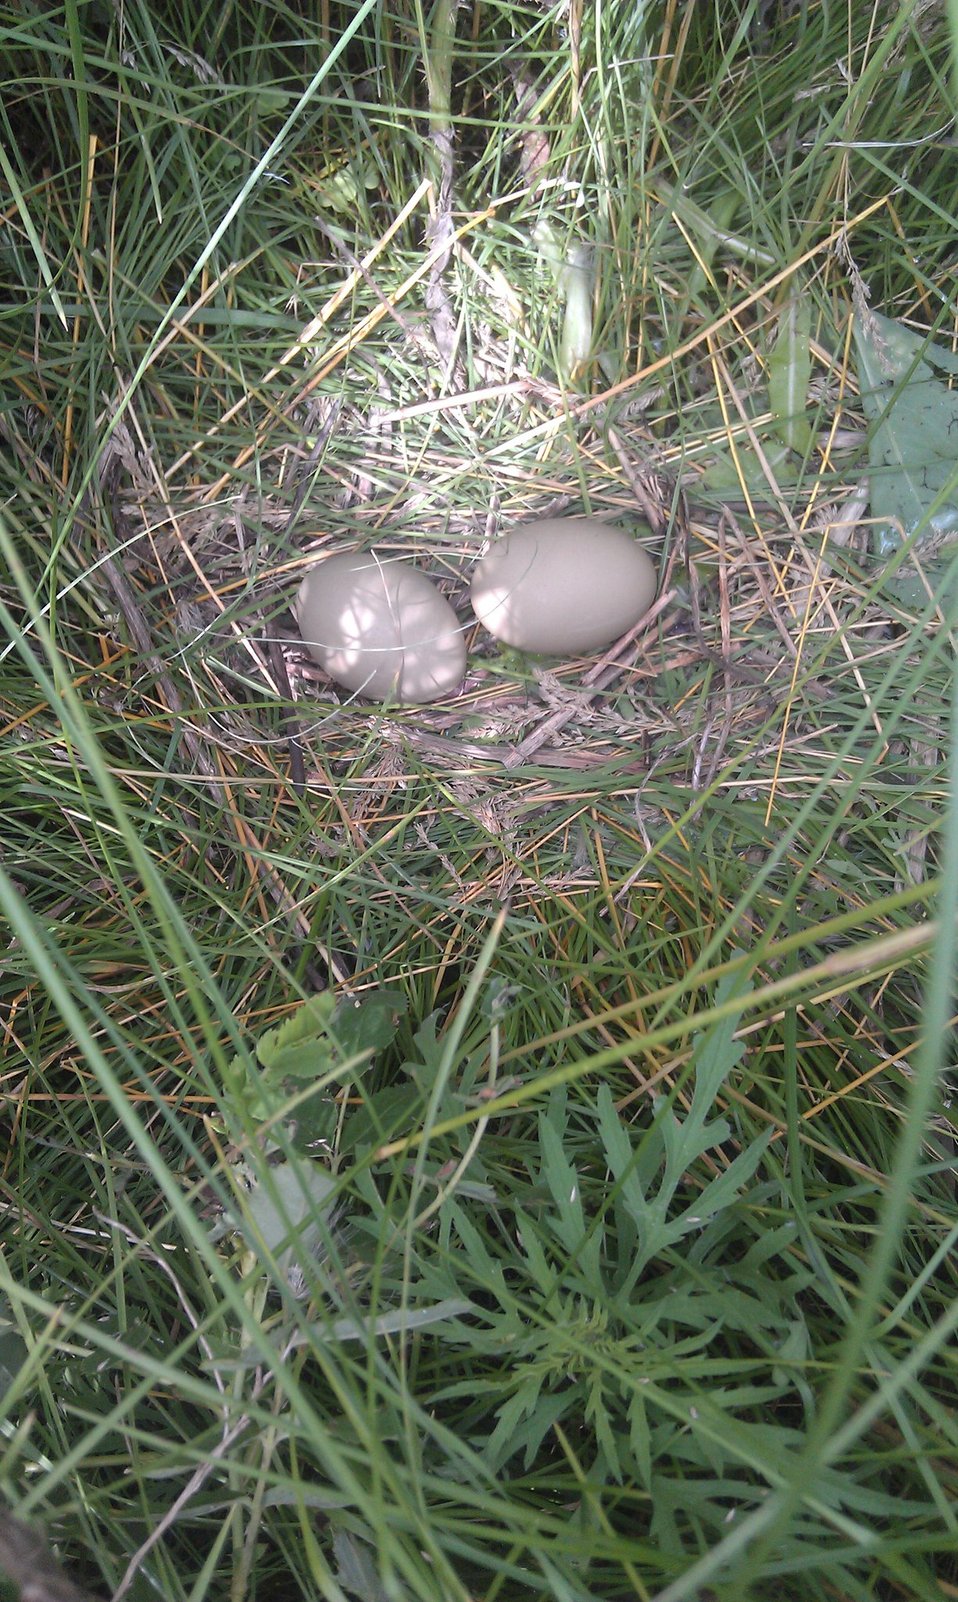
WPA Wildlife

Bittern Nest